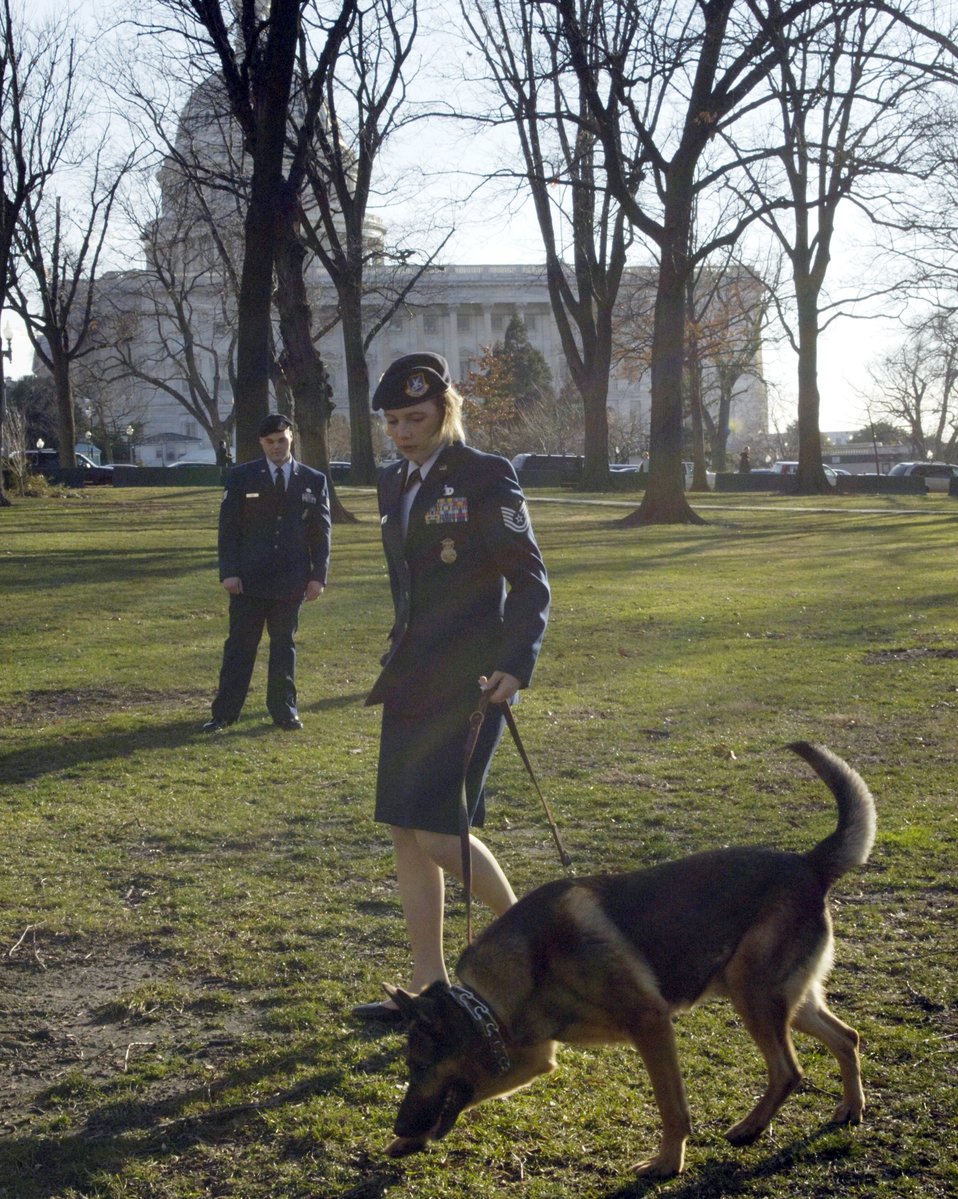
Rex the dog comes to DC

WASHINGTON (AFPN) -- Rex, a retired military working dog, gets some exercise on Capitol Hill on Jan. 31. Rex and Air Force security forces specialist Tech. Sgt. Jamie Dana were here to visit with Sen. John Warner, Rep. John Murtha and Rep. John Peterson, who were all instrumental in pushing through legislation which allowed Jamie Dana to adopt Rex following their recovery from injuries they sustained while deployed to Iraq. Sergeant Jamie Dana, who is stationed at Peterson Air Force Base, Colo., and Rex were here to attend the State of the Union address. They took the opportunity to thank the lawmakers who made it possible for the two to stay together as a team.